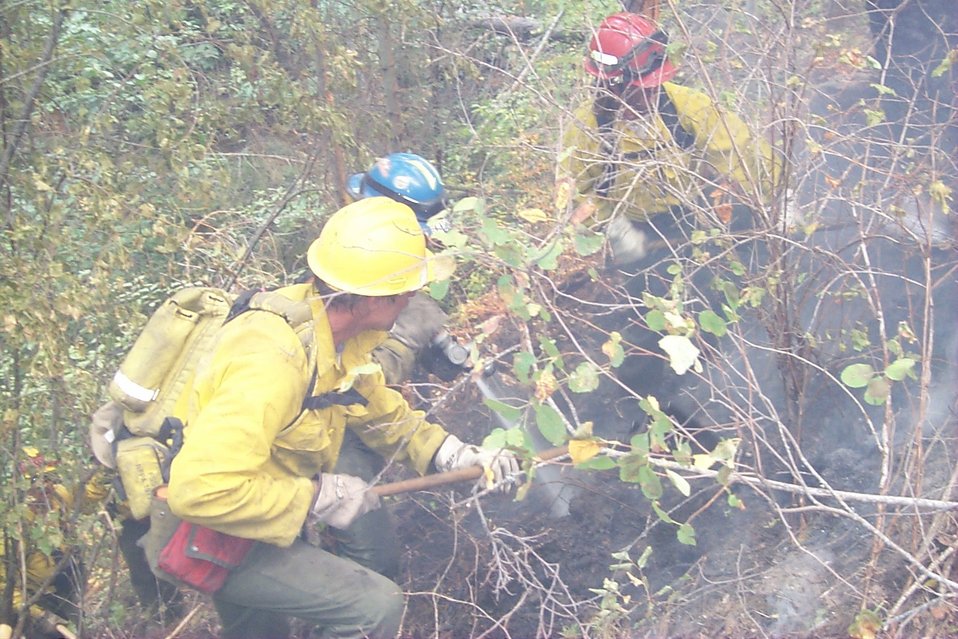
Fire fighters Fire Clearwater Fire Salmon Field Office USRD Upper Snake River District